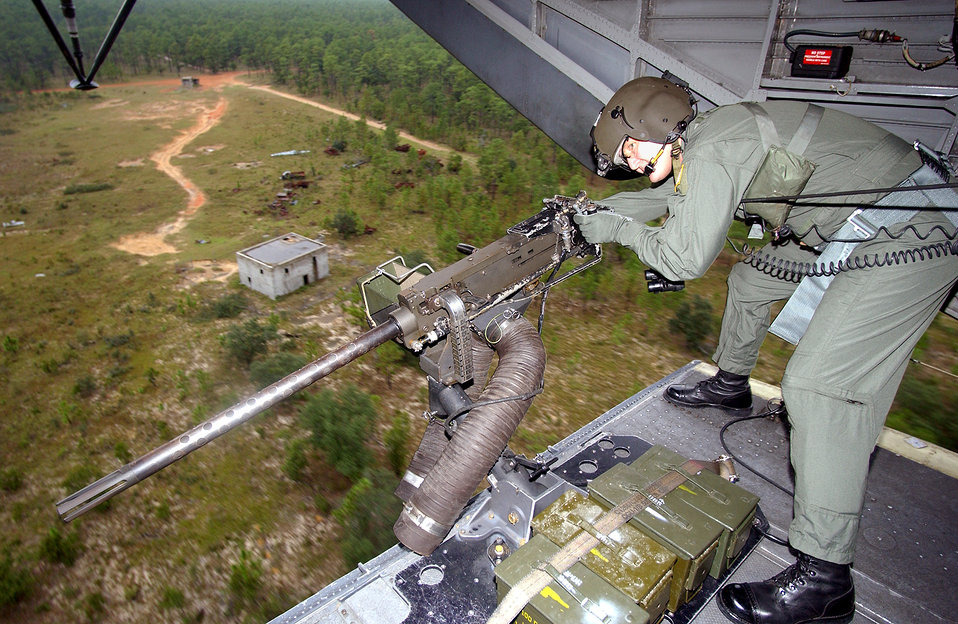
Chief aerial gunner

HURLBURT FIELD, Fla. (AFPN) -- Chief Master Sgt. of the Air Force Gerald Murray shoots a 50-caliber machine gun during an MH-53 Pave Low helicopter training orientation flight over the firing range at Eglin Air Force Base, Fla. Murray visited here to learn more about the Air Force Special Operations Command mission and meet the airmen serving at the base.